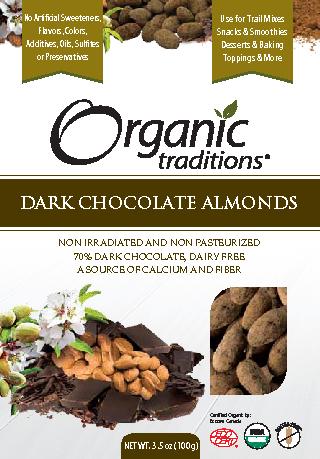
ChocAlmonds 100g Front4.4375x6.375 US LR